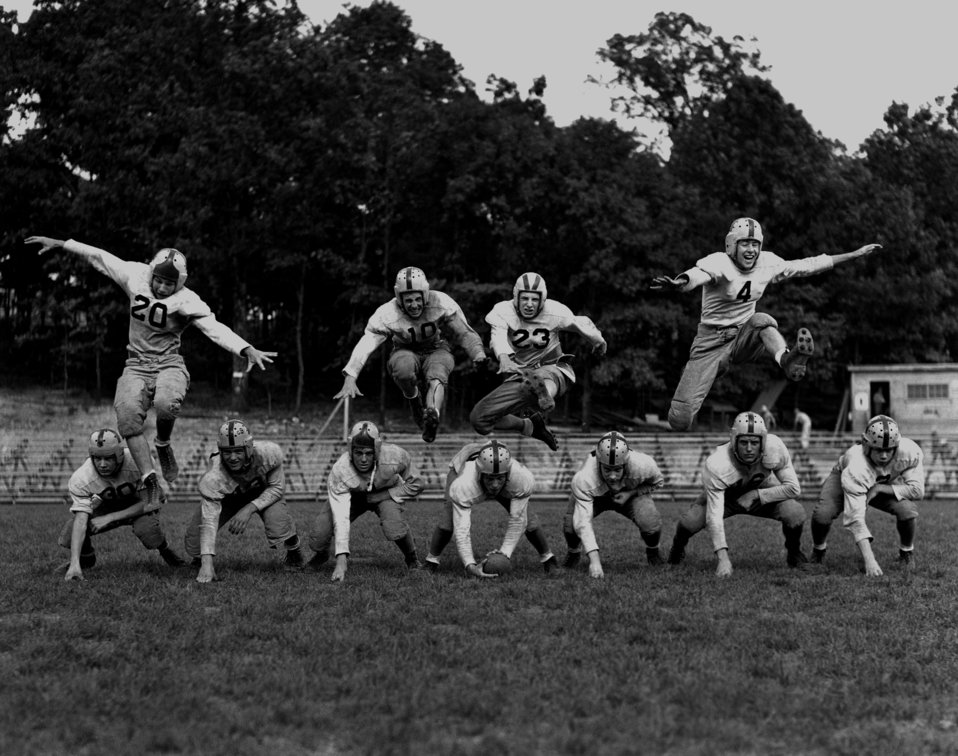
Oak Ridge High School Football Practice Oak Ridge

Pro 3-1 DOE photo by Ed Westcott
Oak Ridge High School Football Practice Oak Ridge Tennessee 8-30-1944